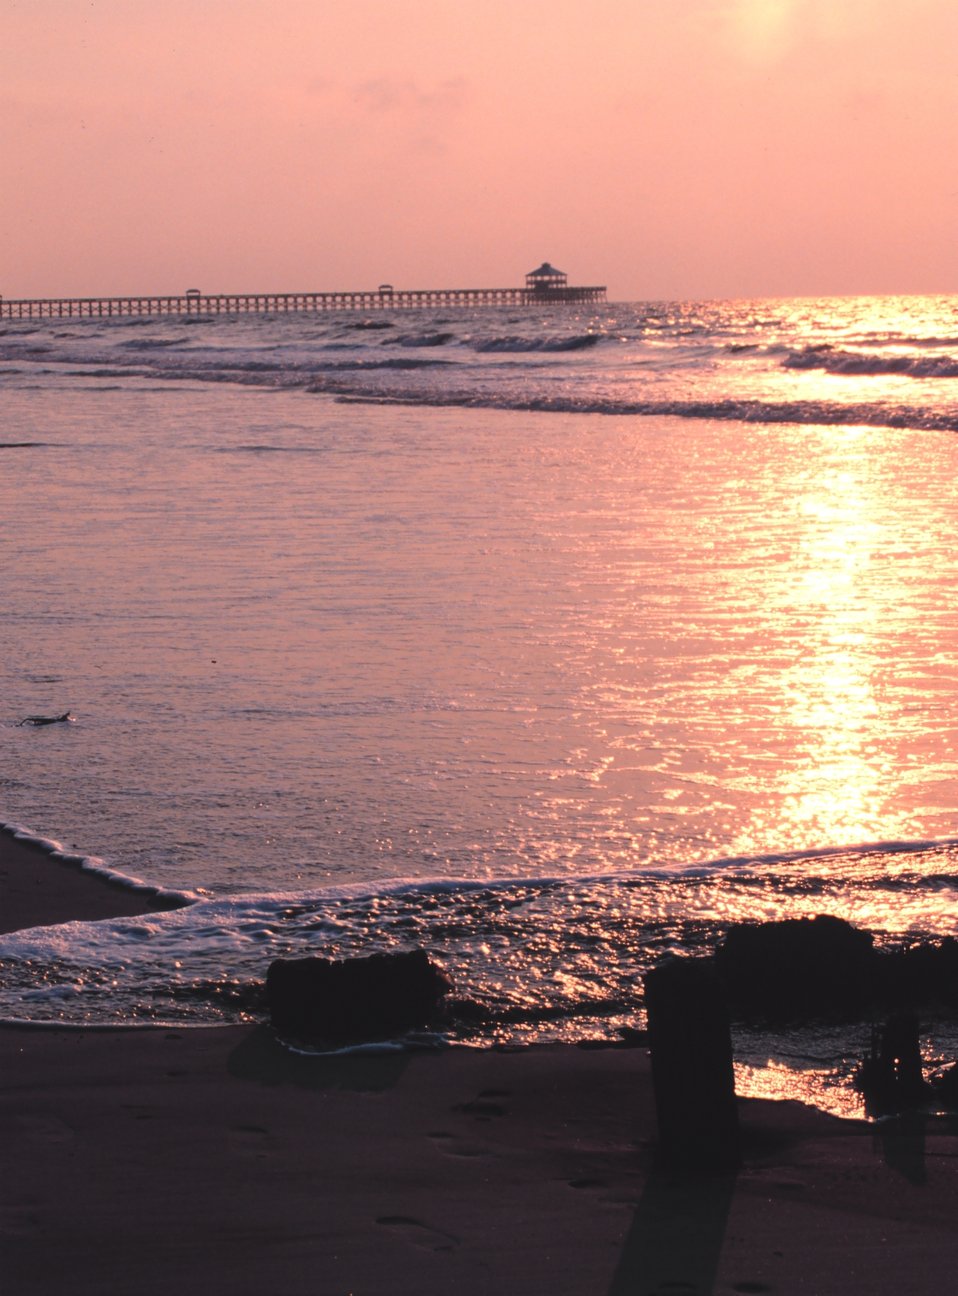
Sun rising through early morning haze reflecting in the surf